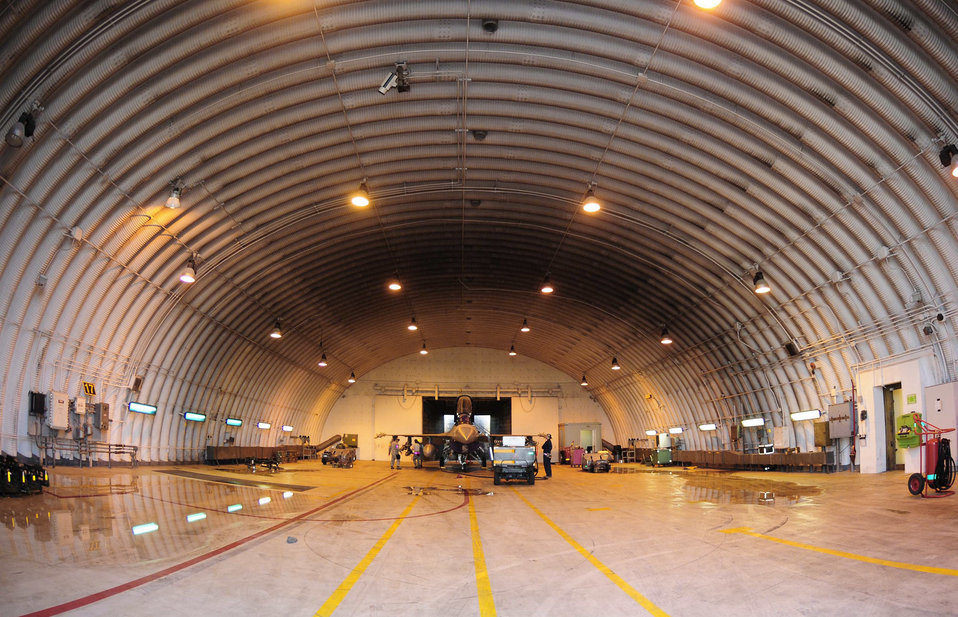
Odyssey Dawn

Weapons load crewmembers from the 510th Aircraft Maintenance Unit secure an ordnance to an F-16 Fighting Falcon March 21, 2011, at Aviano Air Base, Italy. The aircraft will deploy in support of Operation Odyssey Dawn. Joint Task Force Odyssey Dawn is the U.S. Africa Command task force established to support the larger international response to the unrest in Libya. A broad coalition of nations are partnering to enforce U.N. Security Council Resolution (UNSCR) 1973, which authorizes all necessary means to protect civilians in Libya under threat of attack by Qadhafi regime forces. JTF Odyssey Dawn is commanded by Admiral Samuel J. Locklear, III.